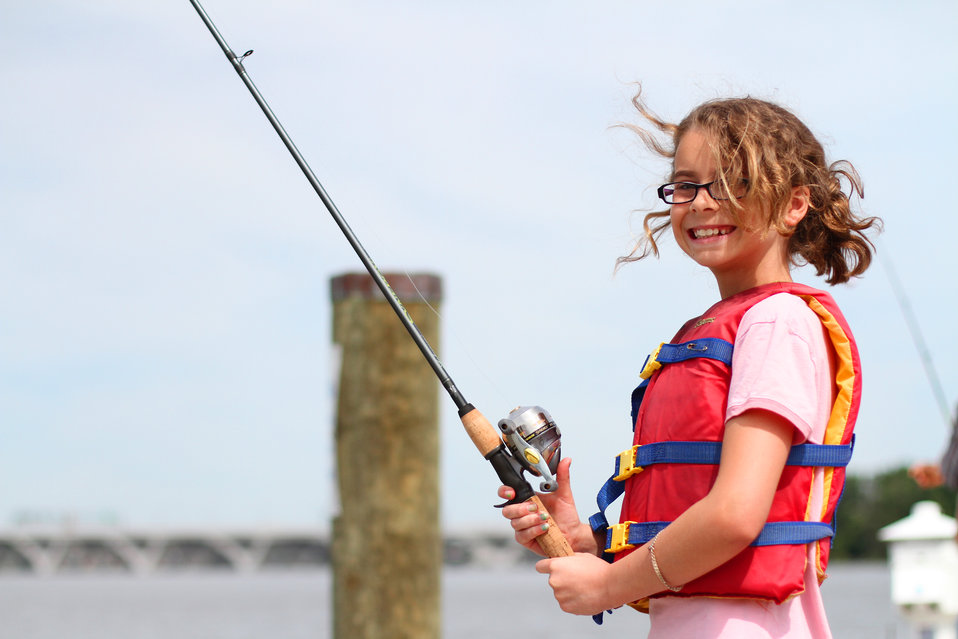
Enjoying the weather and fishing.